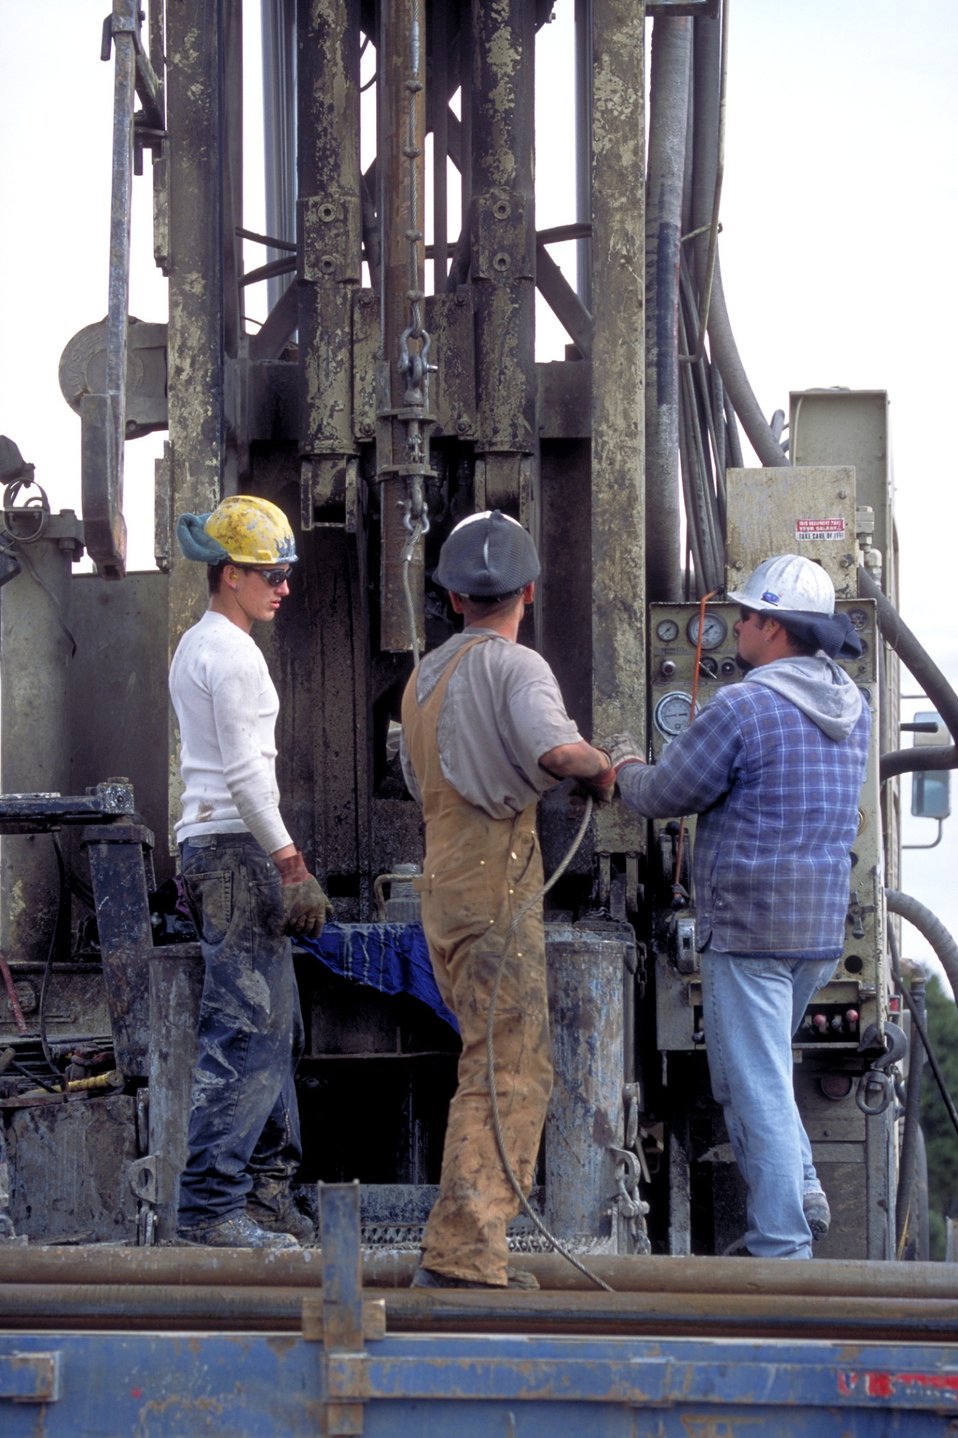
Drilling for coal bed methane near Price, Utah.